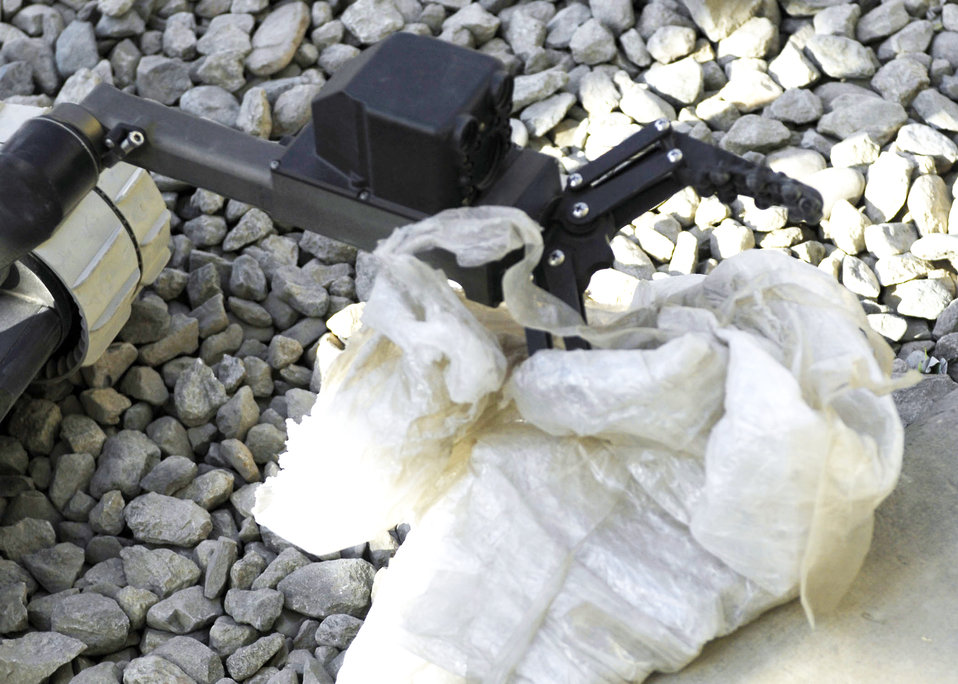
The weapons of warfare adapt with the age of Airmen

A robot is used to remove plastic around a mock improvised explosive device during training Oct. 26, 2009, at Bagram Airfield, Afghanistan. The robots are used by explosive ordnance disposal teams to assure maximum safety is taken when dealing with IEDs.